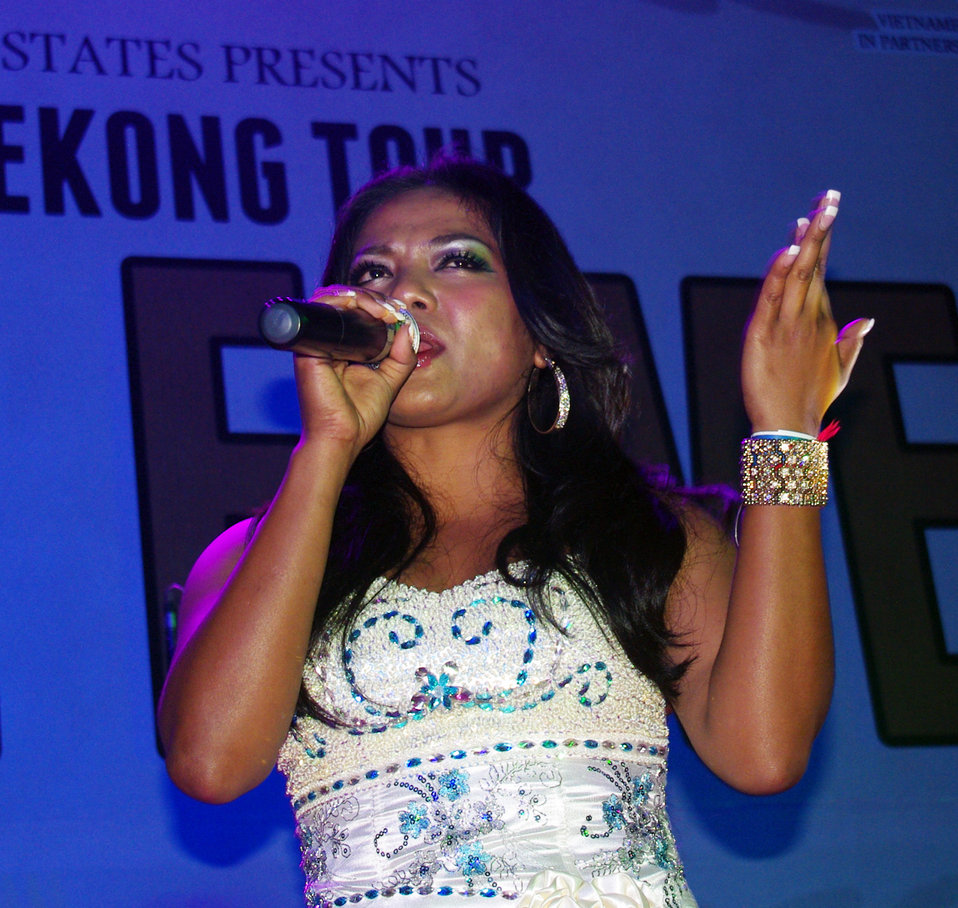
PEPFAR, U.S. Embassy Host Dengue Fever Concert in Hanoi